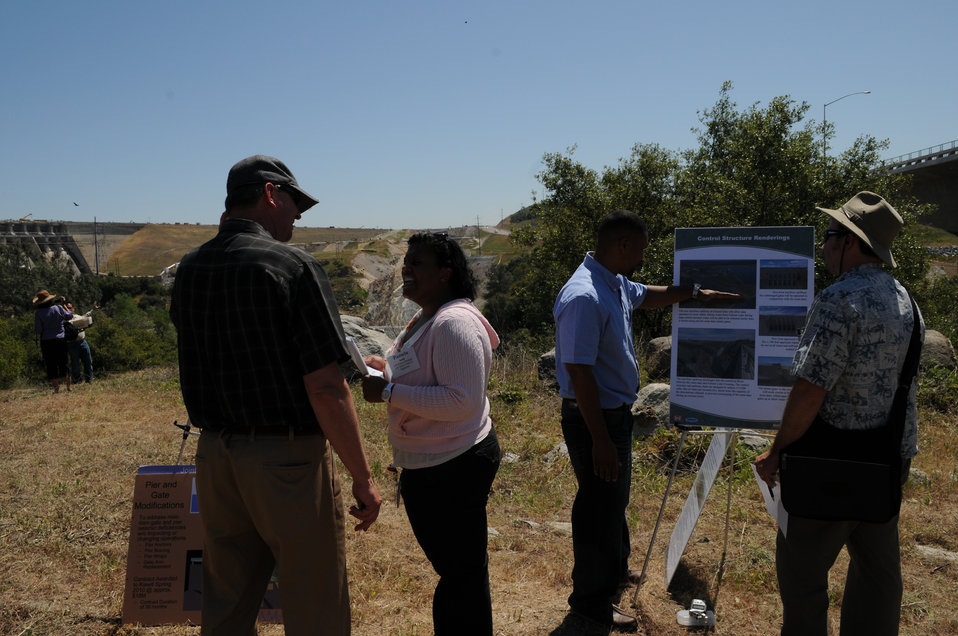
FOLSOM, Calif. (May 4, 2011) – Project managers Pamela Amie from the U.S. Army Corps of Engineers Sacramento District and Mark Curney from the Bureau of Reclamation explain the phases of the Joint Federal Project (JFP) to participants of the Water Education Foundation’s Flood Management tour at the Folsom Dam and auxiliary spillway here May 4.

Amie, one of three Corps project managers for the JFP, joined Corps water manager Kyle Keer at the two-day event, which runs through May 5 and aims to educate participants on the Corps role in flood risk reduction. The tour – attended by many water experts and engineering consultants from throughout California – will include field trips to the Bear River, West Sacramento, the Pocket area and several of the area’s weirs.